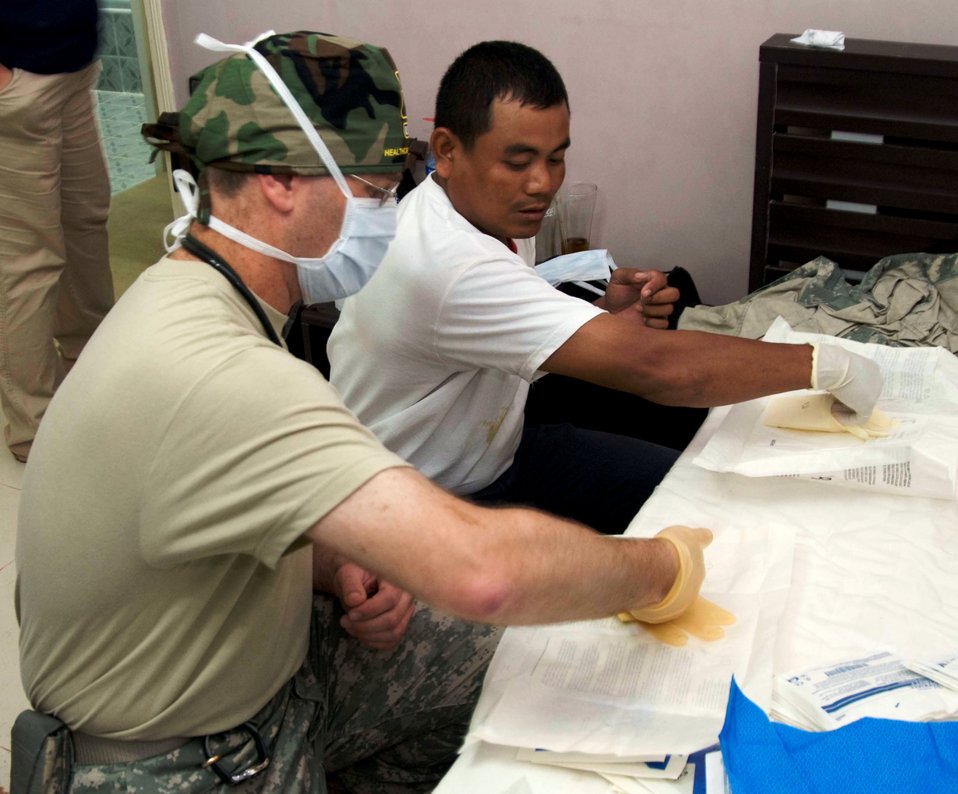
Veterinarian Army Capt. (Dr.) Eric Storey Shows a Technique to Cambodian Veterinarian Pao Thunn

U.S. Army Capt. (Dr.) Eric Storey, a veterinarian from the 994th Medical Detachment, shows Pao Thunn, a Cambodian veterinarian, a technique used to safely dawn sterilized gloves during a veterinarian community service event in support of Pacific Partnership 2010 on June 25, 2010, in Sihanoukville, Cambodia. The Military Sealift Command hospital ship USNS Mercy (T-AH 19) is in Cambodia conducting the fifth in a series of annual U.S. Pacific Fleet humanitarian and civic assistance endeavors to strengthen regional partnerships.